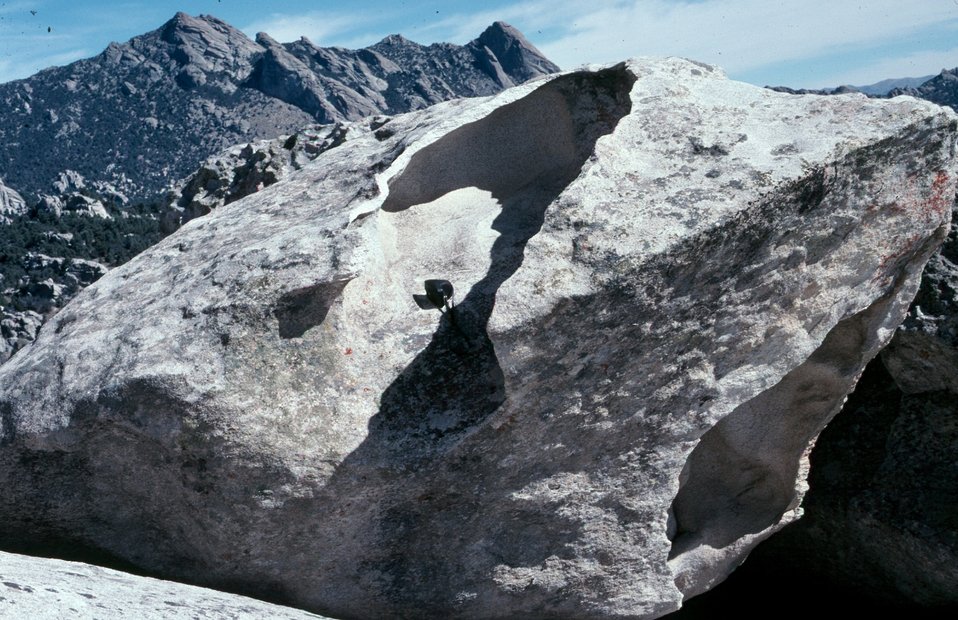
Silent City hollow boulder Burley Field Office USRD Upper Snake River District